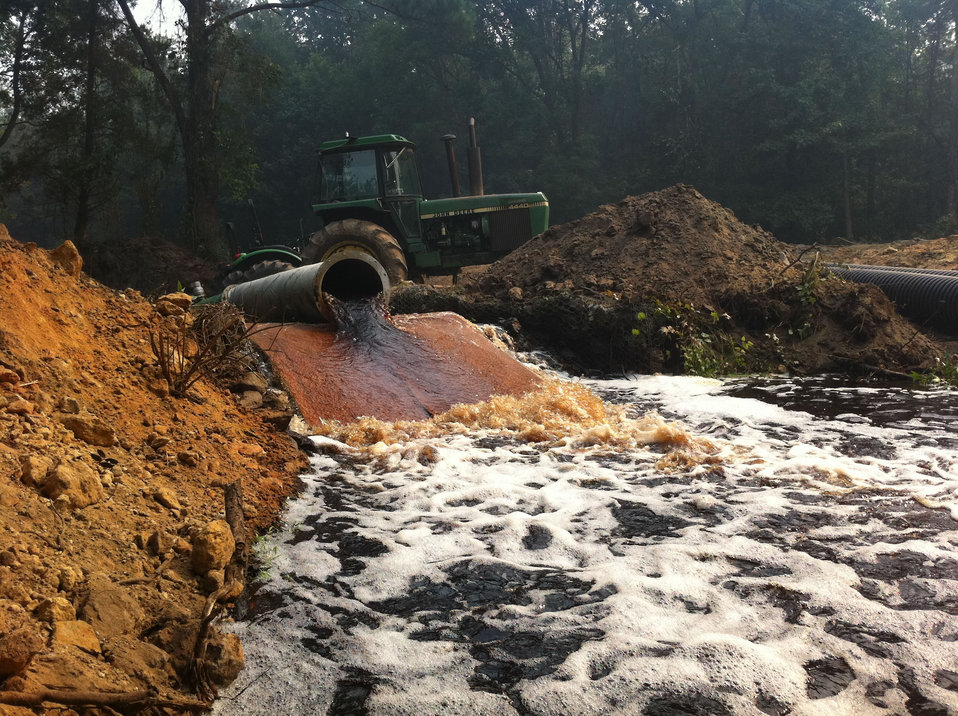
Let it flow

Suffolk, VA, August 2011: Water flows from a pipe attached to a network of pumps, pipes, and ditches used to flood the deep-burning Lateral West Fire on Great Dismal Swamp National Wildlife Refuge. The will smolder in peat soils until the soils are saturated with water.